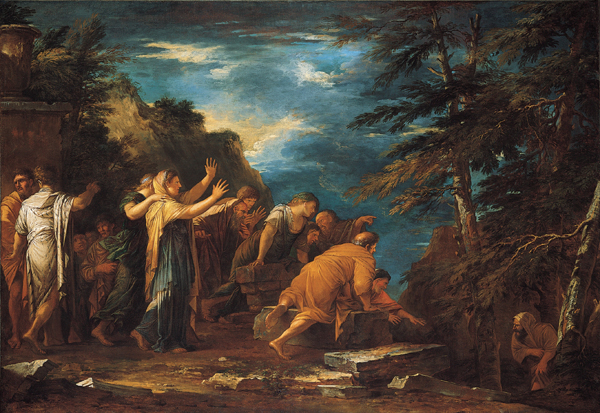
Pythagoras Emerging from the Underworld